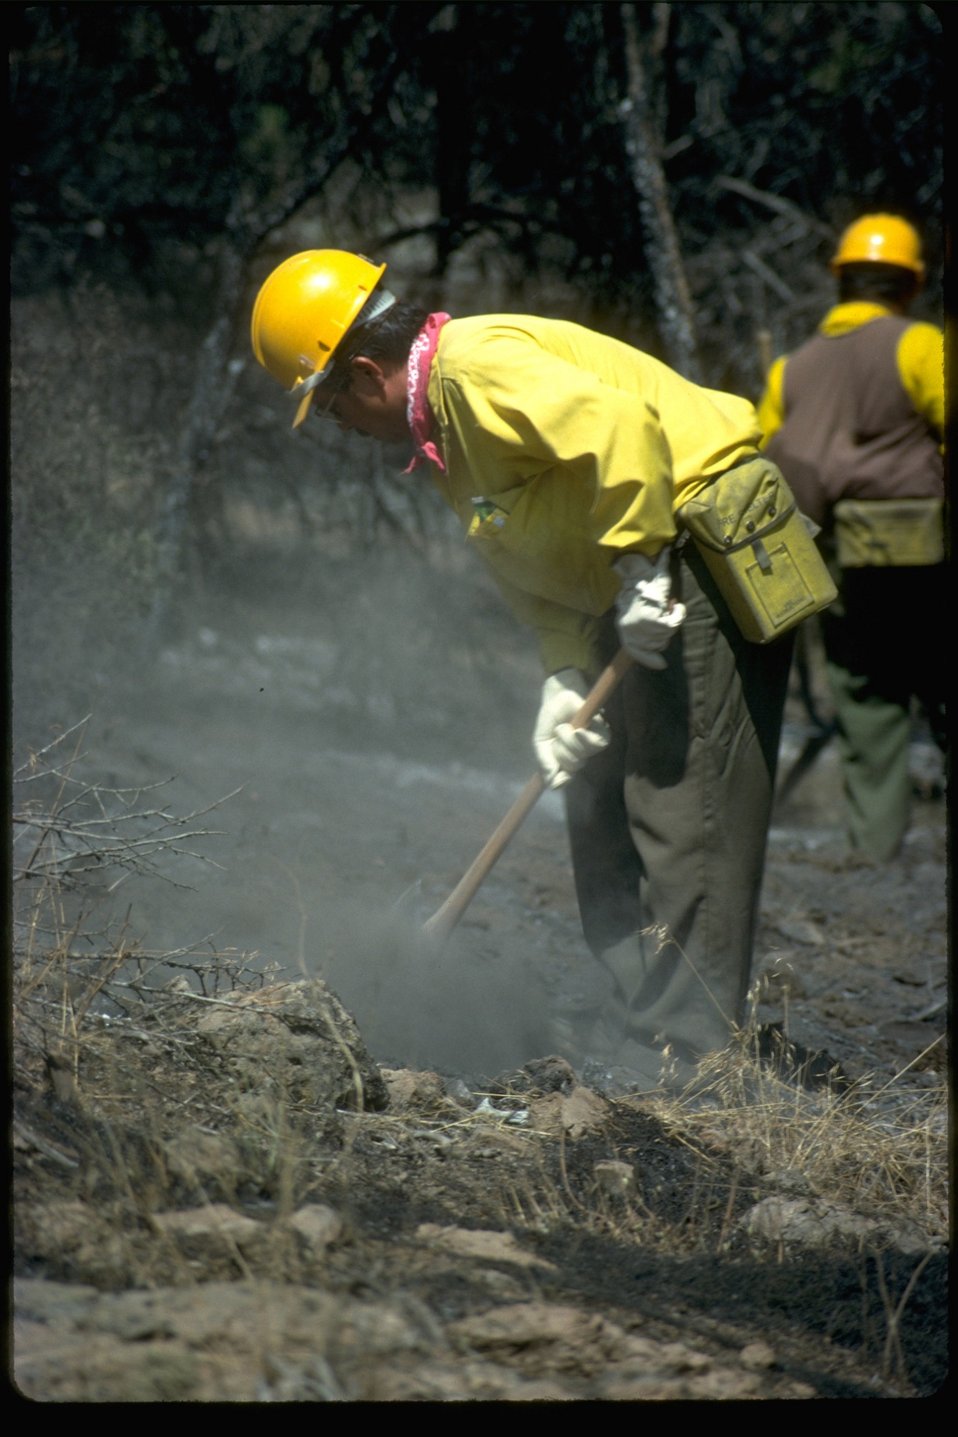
Fire suppression by a Snake River Valley crew member at the Skull Creek Fire near Burns, Oregon.